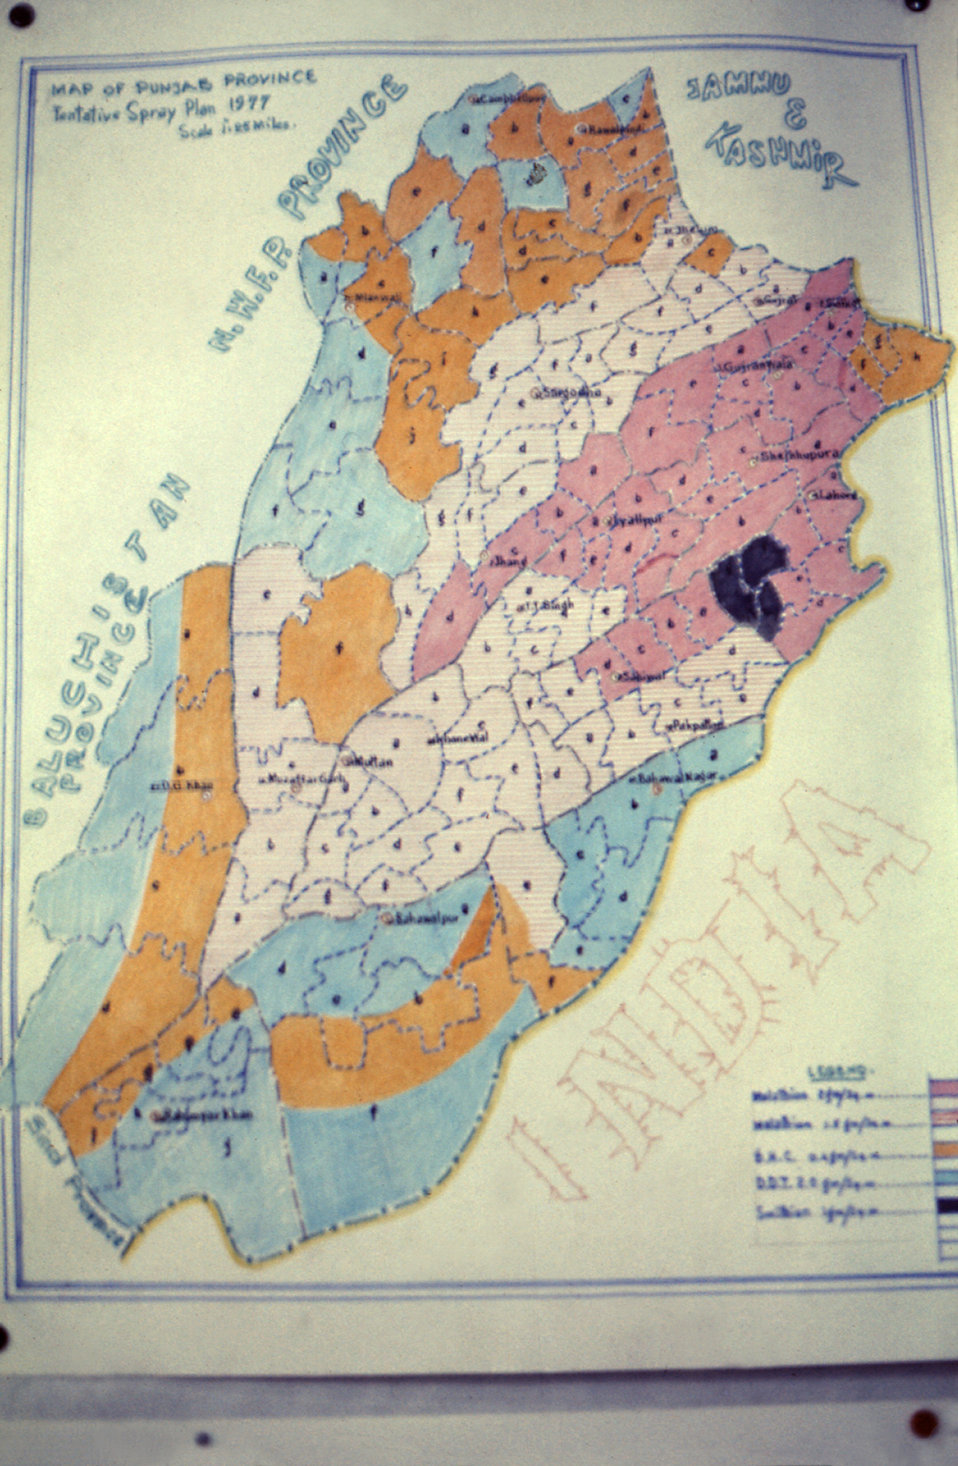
This map illustrates the tentative area to be sprayed with malathion during a 1976 Pakistani anti-mosquito campaign.